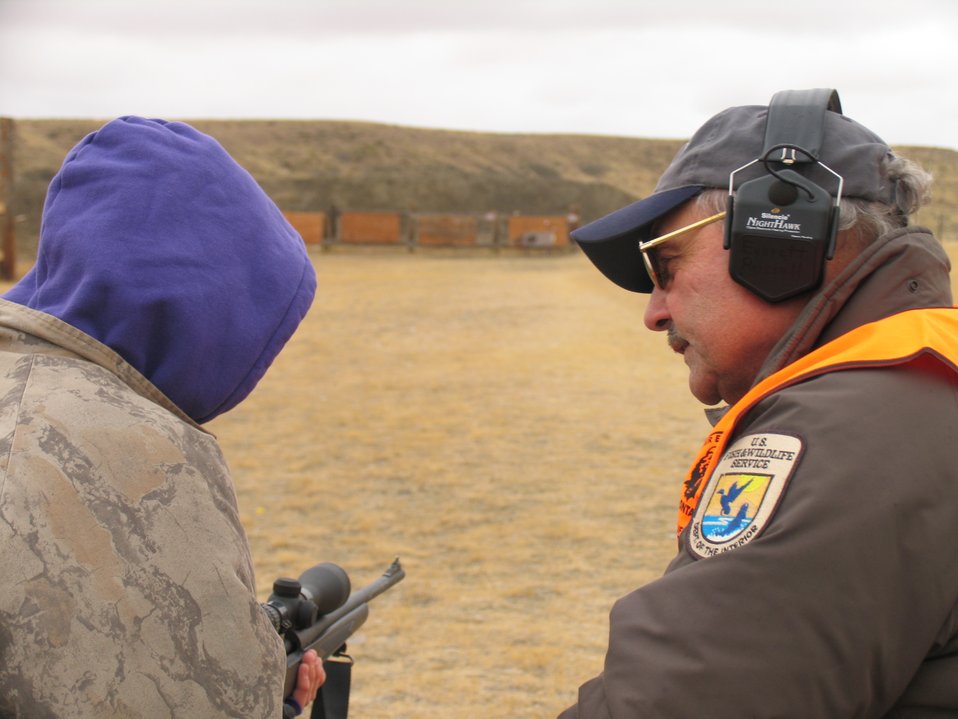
Youth Elk Hunting Workshop

Refuge employees administer a youth elk hunting workshop at Charles M. Russell National Wildlife Refuge. Here, youth learn the proper techniques and laws for hunting.